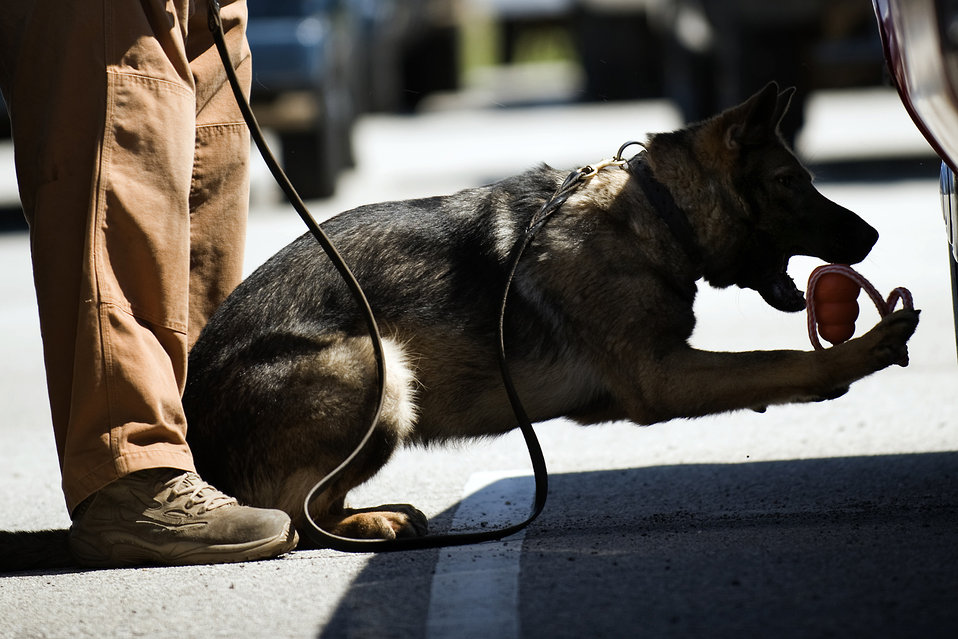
Training for military working dogs

Staff Sgt. William Riney rewards his military working dog for detecting narcotics around vehicles on the training grounds of Lackland Air Force Base, Texas.